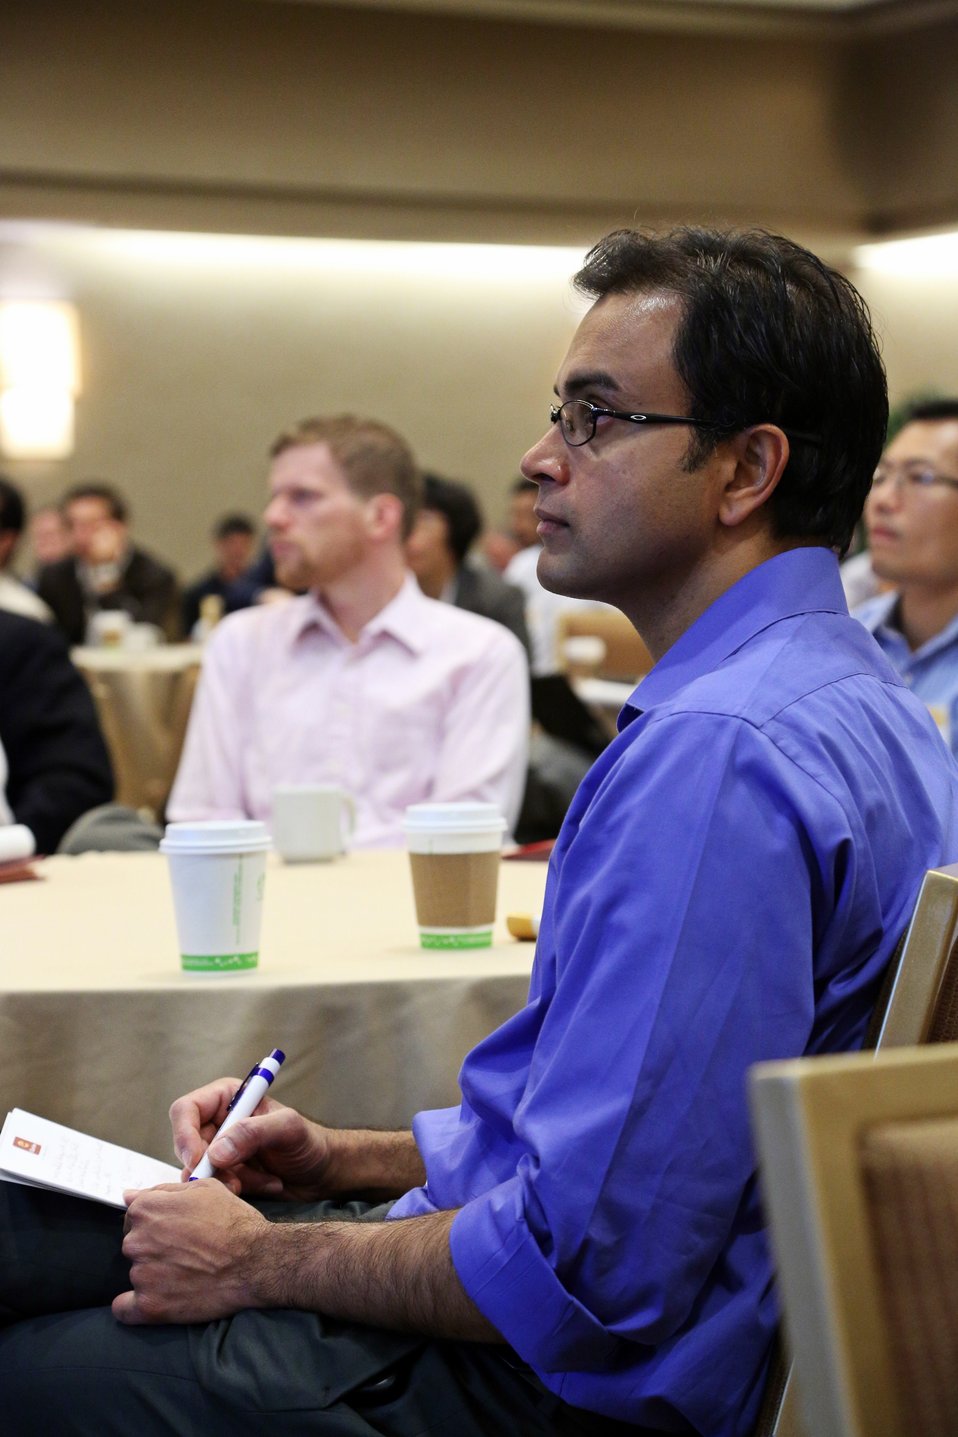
Breakout Sessions 18